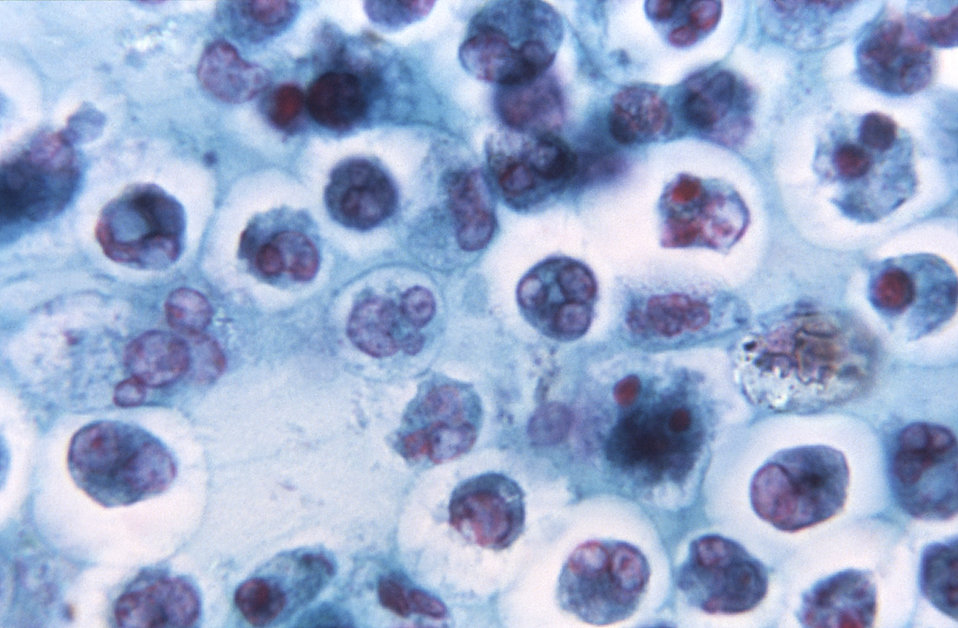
This trichrome-stained photomicrograph revealed a numbers of white blood cells (WBCs), otherwise known as leukocytes. These blood cell are not oxygen-carriers like the red blood cells (RBCs), but act as members of the body's defense mechanism, fighting the constant onslaught of pathogenic invaders such as bacteria, and foreign debris.